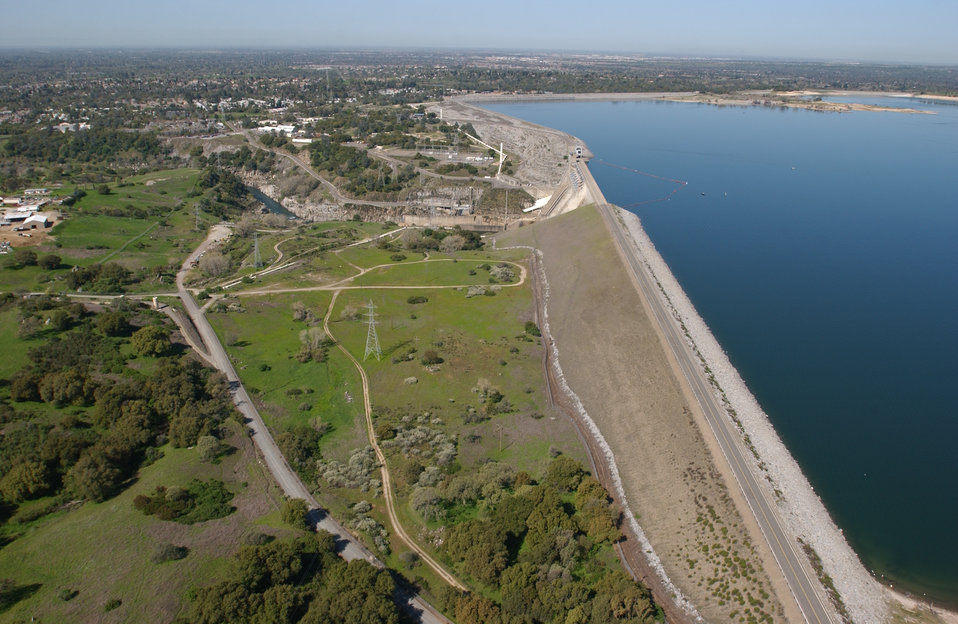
Old Folsom Dam Road

FOLSOM, Calif. (Jan. 24, 2011) - Looking northwest in an aerial view of the old Folsom Dam road, prior to construction of a new roadway and the Folsom Lake Crossing bridge here on March 16, 2004. The U. S. Army Corps of Engineers Sacramento District was authorized to build the bridge in 2004, after security concerns closed the road atop the dam, a major commuter throughway, in 2003. The Corps completed the bridge in March 2009.